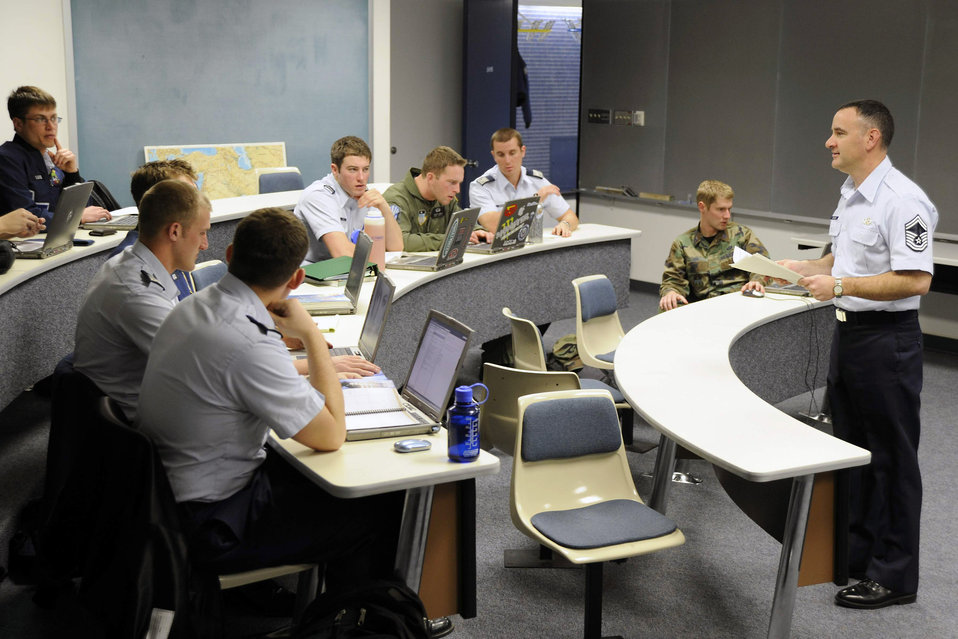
NCO trailblazing for enlisted classroom

Senior Master Sgt. Mark Barner teaches U.S. Air Force Academy cadets the ins and outs of information technology for business managers. He is the first NCO to teach two credited courses in one semester at the Academy.